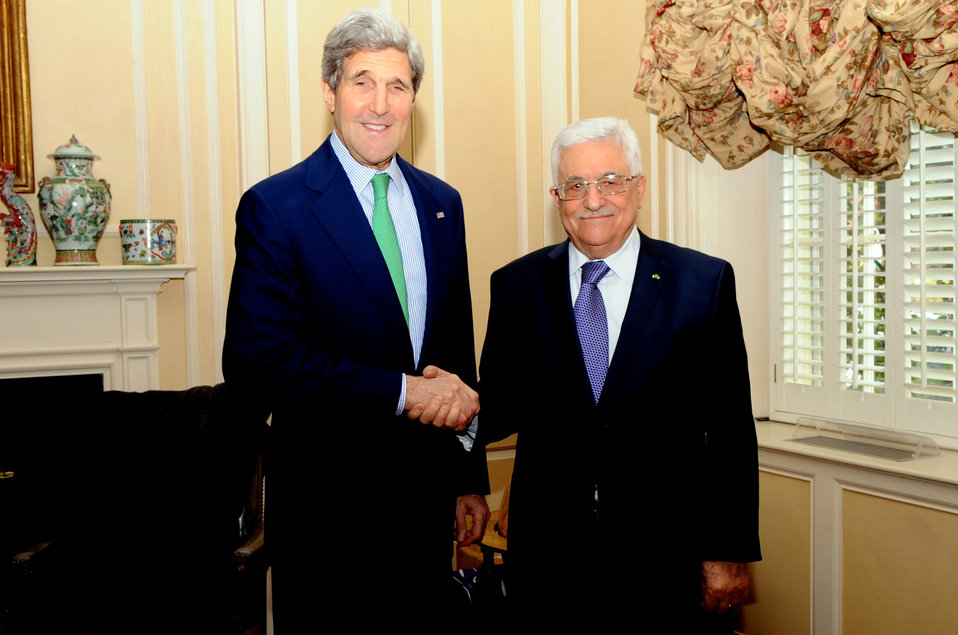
Secretary Kerry Meets With Palestinian Authority President Mahmoud Abbas

U.S. Secretary of State John Kerry shakes hands with Palestinian Authority President Mahmoud Abbas before a meeting in Washington, D.C., on March 16, 2014.